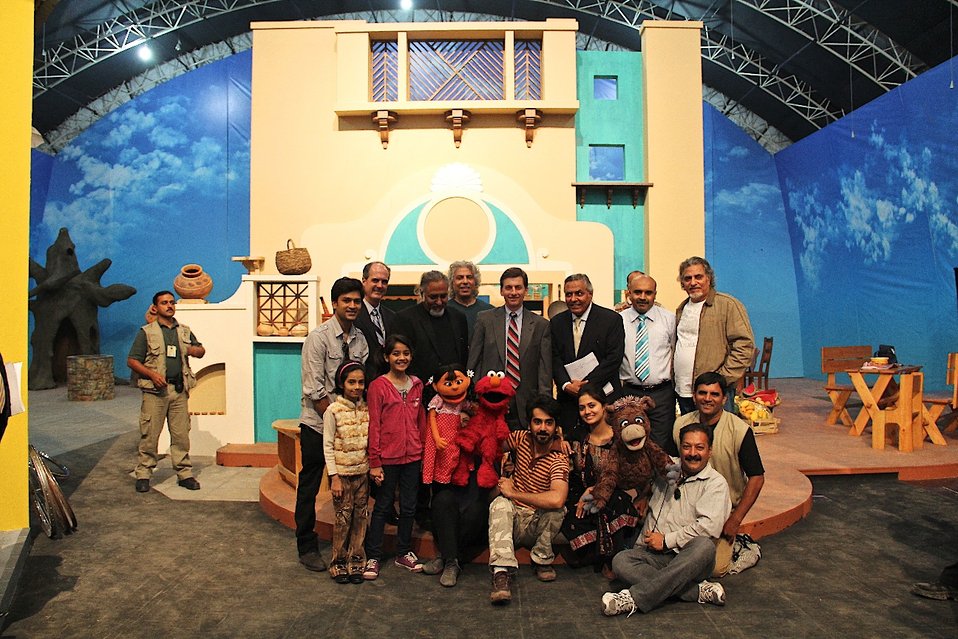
Andy with Sim Sim Hamara team